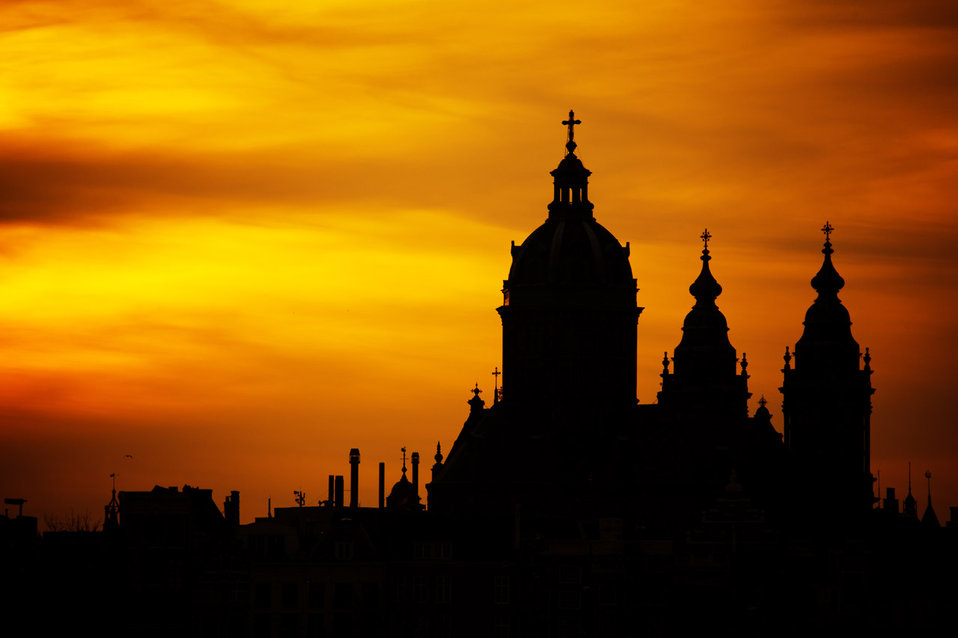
Church silhouette at sunset in amsterdam.